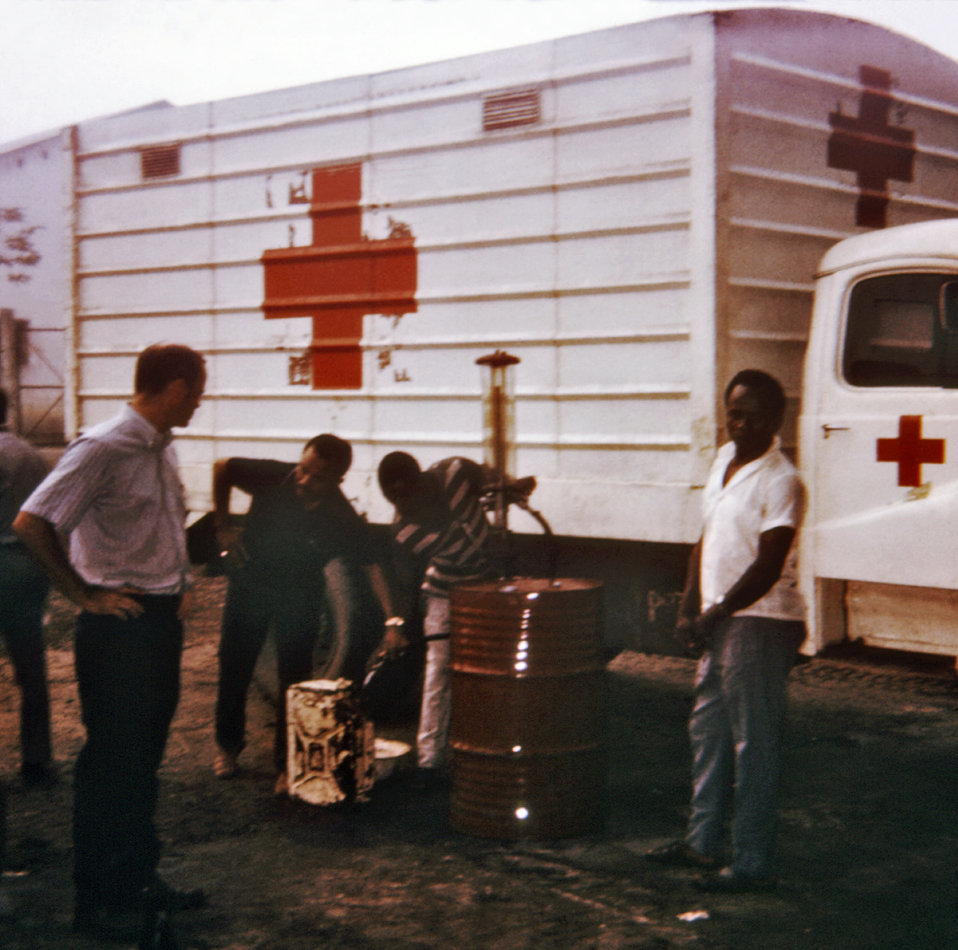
This photograph shows a Red Cross truck that was fueling up before distributing its load of foods to a refugee relief camp during the Nigerian-Biafran war.